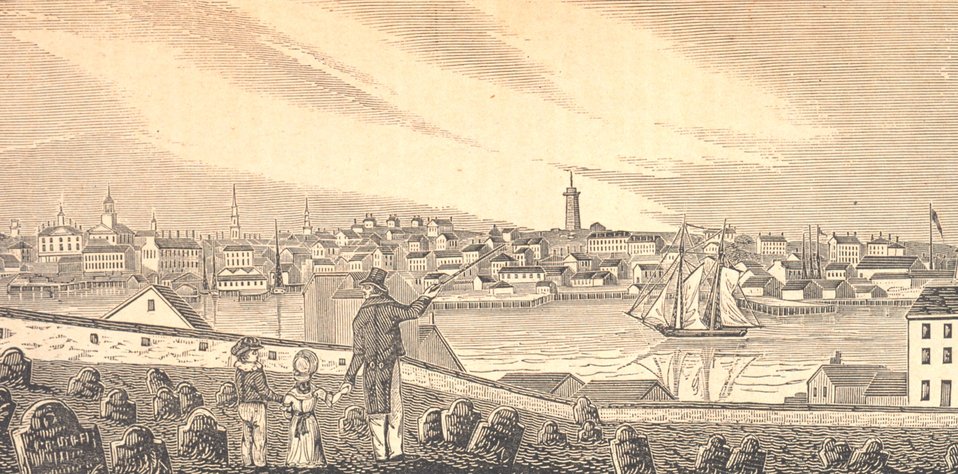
A view of Charlestown from the cemetery on Copp's Hill in Boston. Bunker Hill Monument on Breed's Hill and Bunker Hill further to the north are seen in the central part of the image. Buildings of the U.S. Navy Yard are seen on the extreme right. In: Historical Collections ... of Every Town in Massachusetts. 1841.